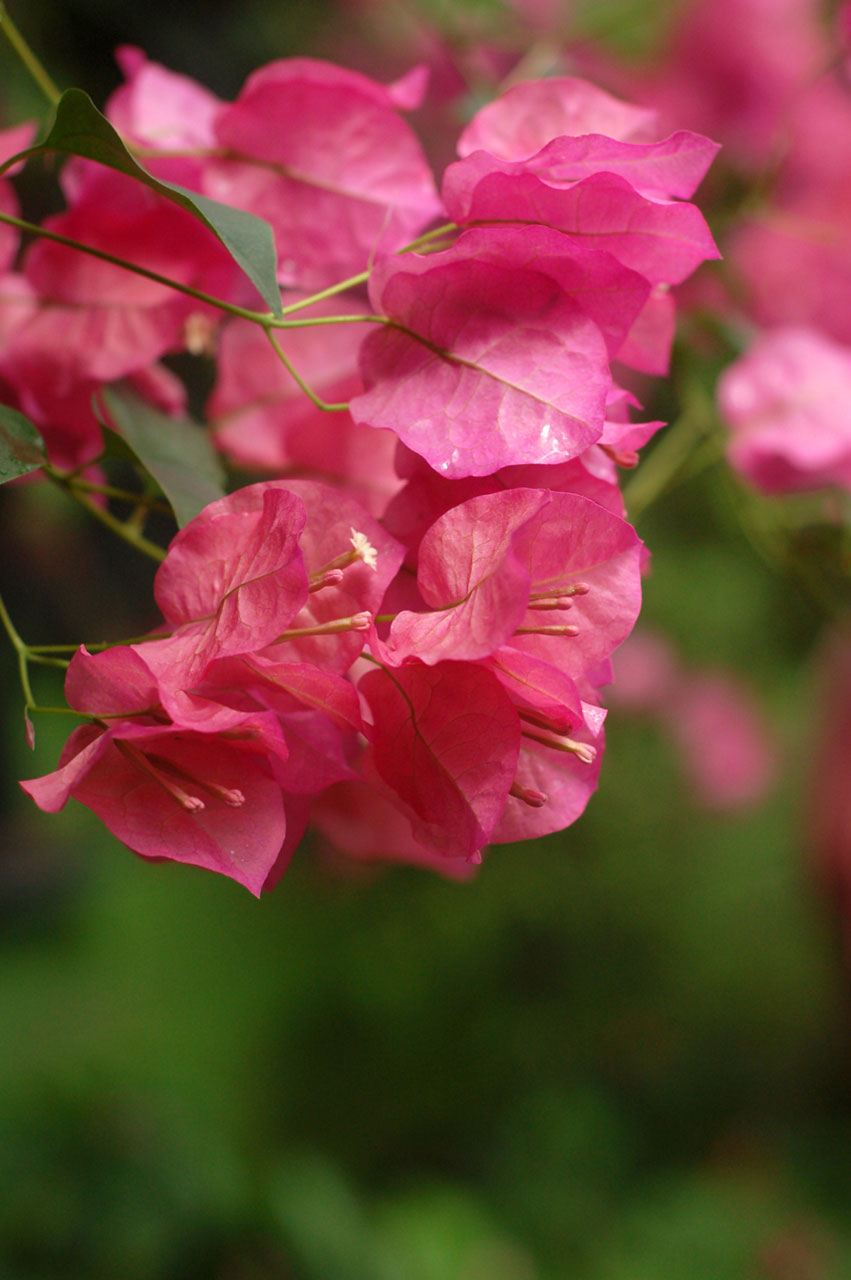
Bouganvilla flowers

Bright pink bouganvilla flowers in a greenhouse.